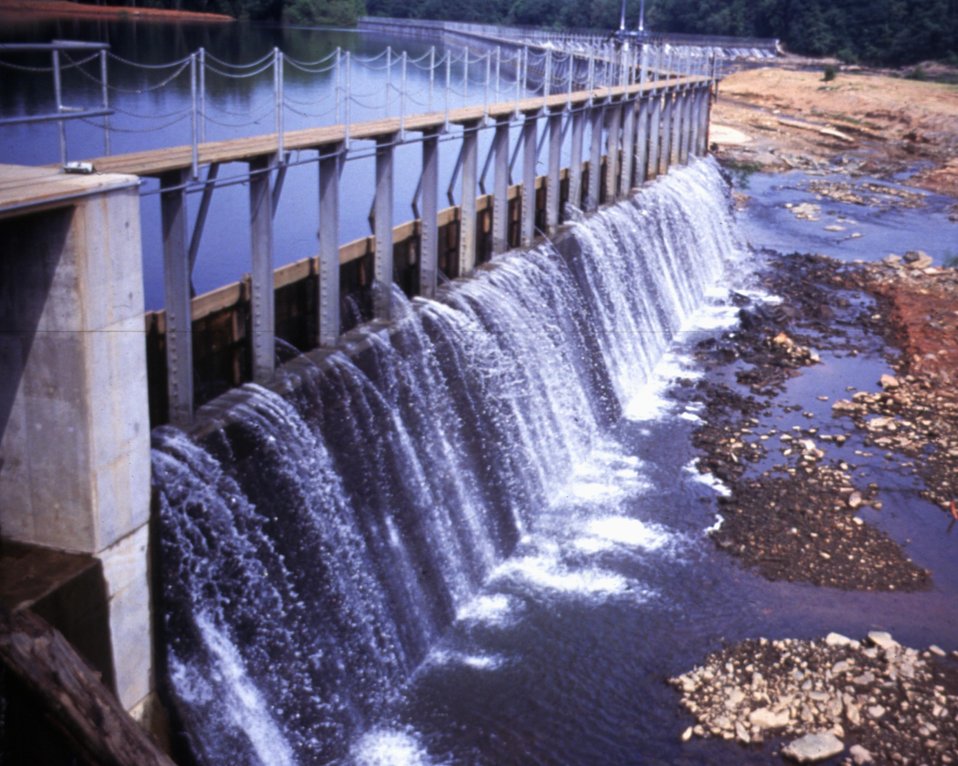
GENERAL VIEW OF FLASH BOARDS.

THE DOE SMALL-SCALE HYDROPOWER PROGRAM CONSISTS OF 19 PROJECTS AND DEMONSTRATES THE VIABILITY OF SMALL-SCALE HYDRO-POWER WITH AVAILABLE TECHNOLOGY. THE BROAD RIVER PROJECT, BEGUN IN JANUARY, 1983, WENT ON LINE DECEMBER 27, 1987. UTILIZING ONE OPEN-PIT TUBULAR TURBINE THAT PRODUCES A MAXIMUM OF 4,140 KILOWATTS, THE DAM PROVIDES A GROSS HEAD OF 20.2 FEET WITH AN ANNUAL STREAM FLOW OF 2,472 CFS.